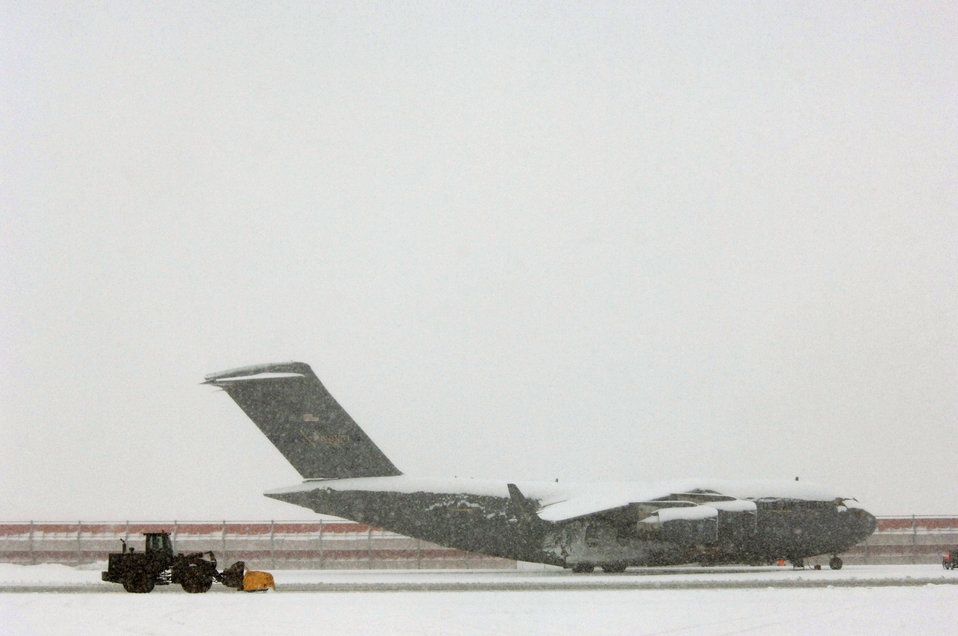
Snow-covered C-17s

Several days of storms left 6 inches of snow covering C-17 Globemaster IIIs at Ramstein Air Base, Germany, on Friday, March 3, 2006. The 435th Civil Engineer Squadron's large vehicles and equipment section worked nonstop keeping the runways and taxiways clear.